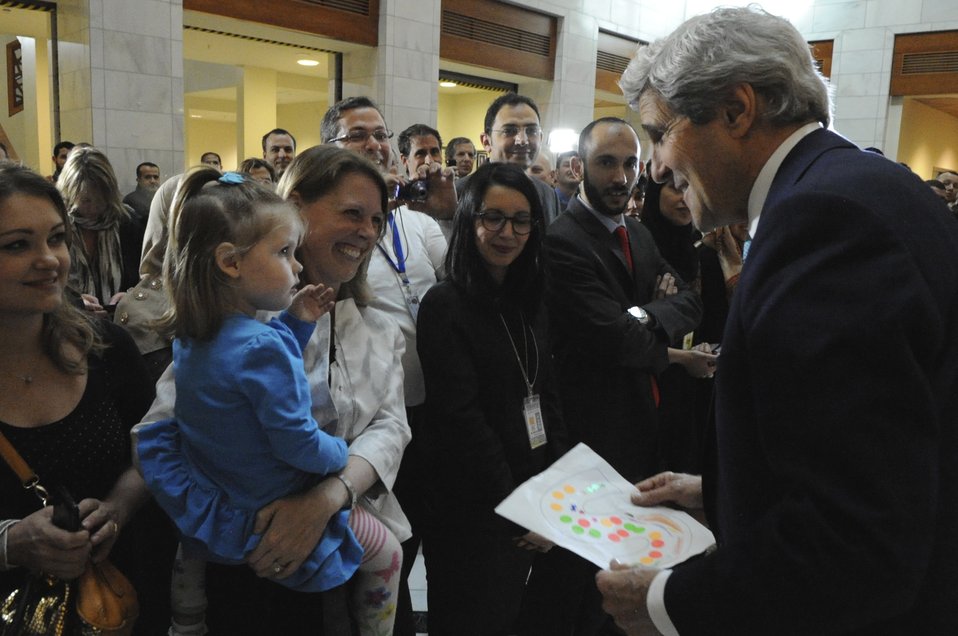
Secretary Kerry Admires 'S' Drawing Presented to Him By Daughter of Embassy Algiers Staffer

U.S. Secretary of State John Kerry thanks the young daughter of an Embassy Algiers staffer after she presented him with a drawing of the letter 'S' - his State Department acronym - before a meet-and-greet in Algiers, Algeria on April 3, 2014.